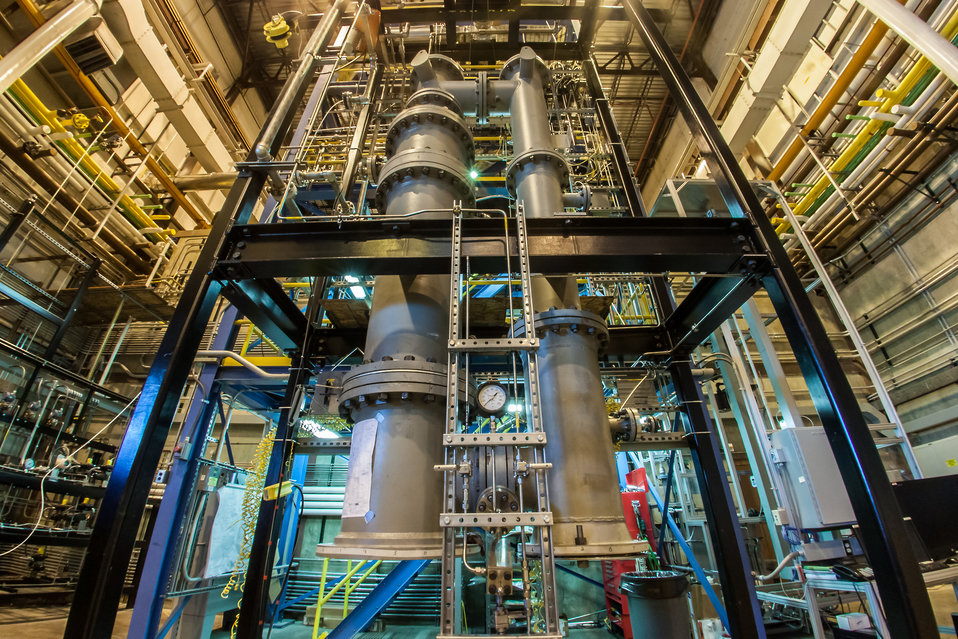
CHEMICAL LOOPING REACTOR AT NATIONAL ENERGY TECHNOLOGY LABORATORY.